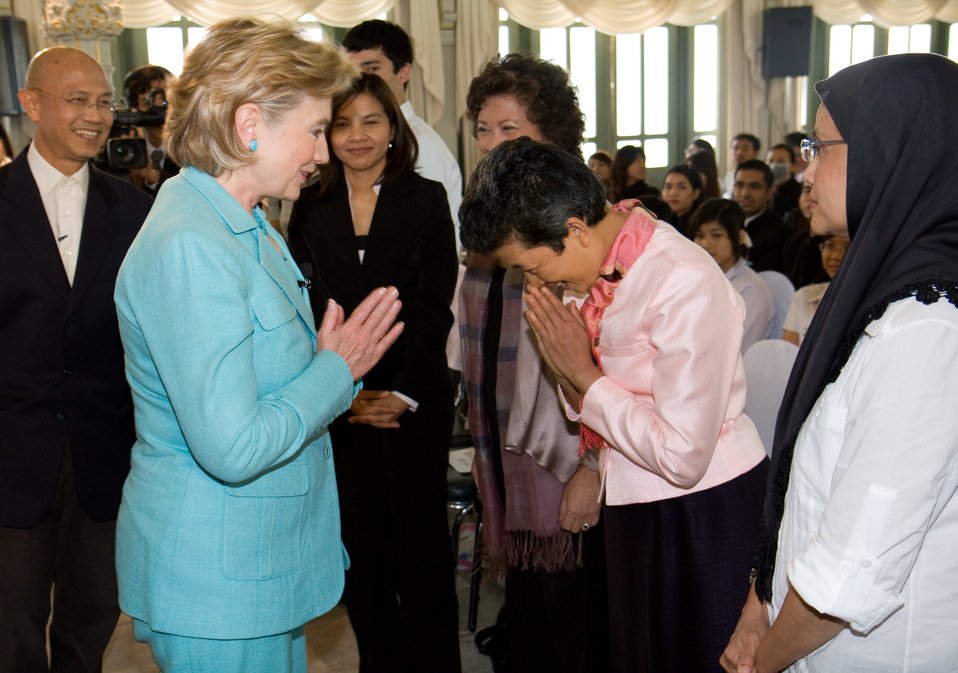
Secretary Clinton Interviews With the Nation Group

U.S. Secretary of State Hillary Rodham Clinton is greeted with a Thai 'wai' by Tuenjai Deetes, Founder and Advisor of the Hill Areas Development Foundation after an interview at Phyathai Palace in Bangkok, Thailand July 22, 2009.